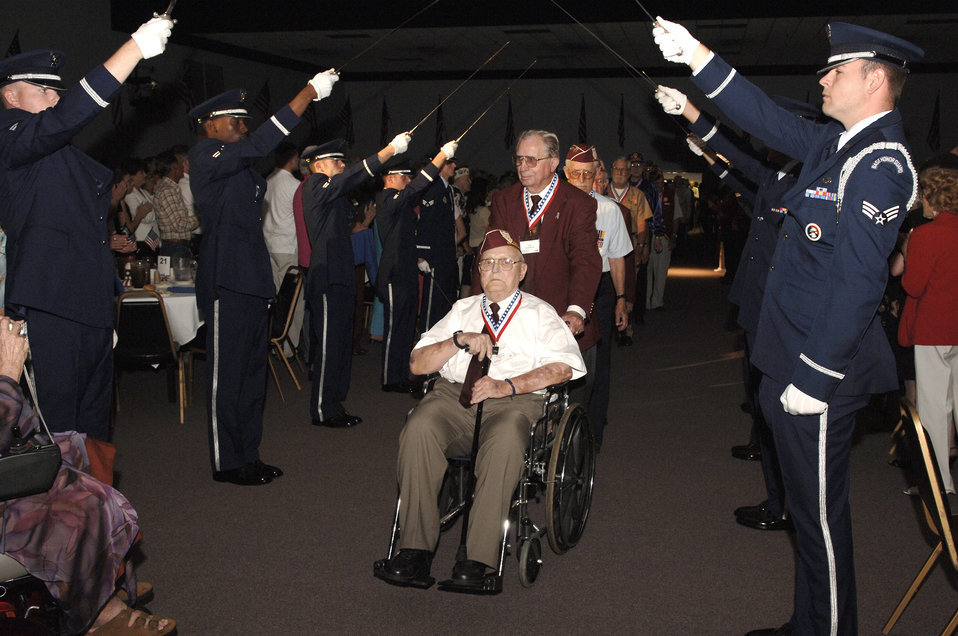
In their honor

World War II Purple Heart recipient Wiley Smith is honored, along with other Purple Heart recipients, during the during the 2006 Former POW/Purple Heart Luncheon at Barksdale Air Force Base, La., on Saturday, May 20, 2006. Lt. Gen. Kevin P. Chilton, 8th Air Force commander, was the keynote speaker.